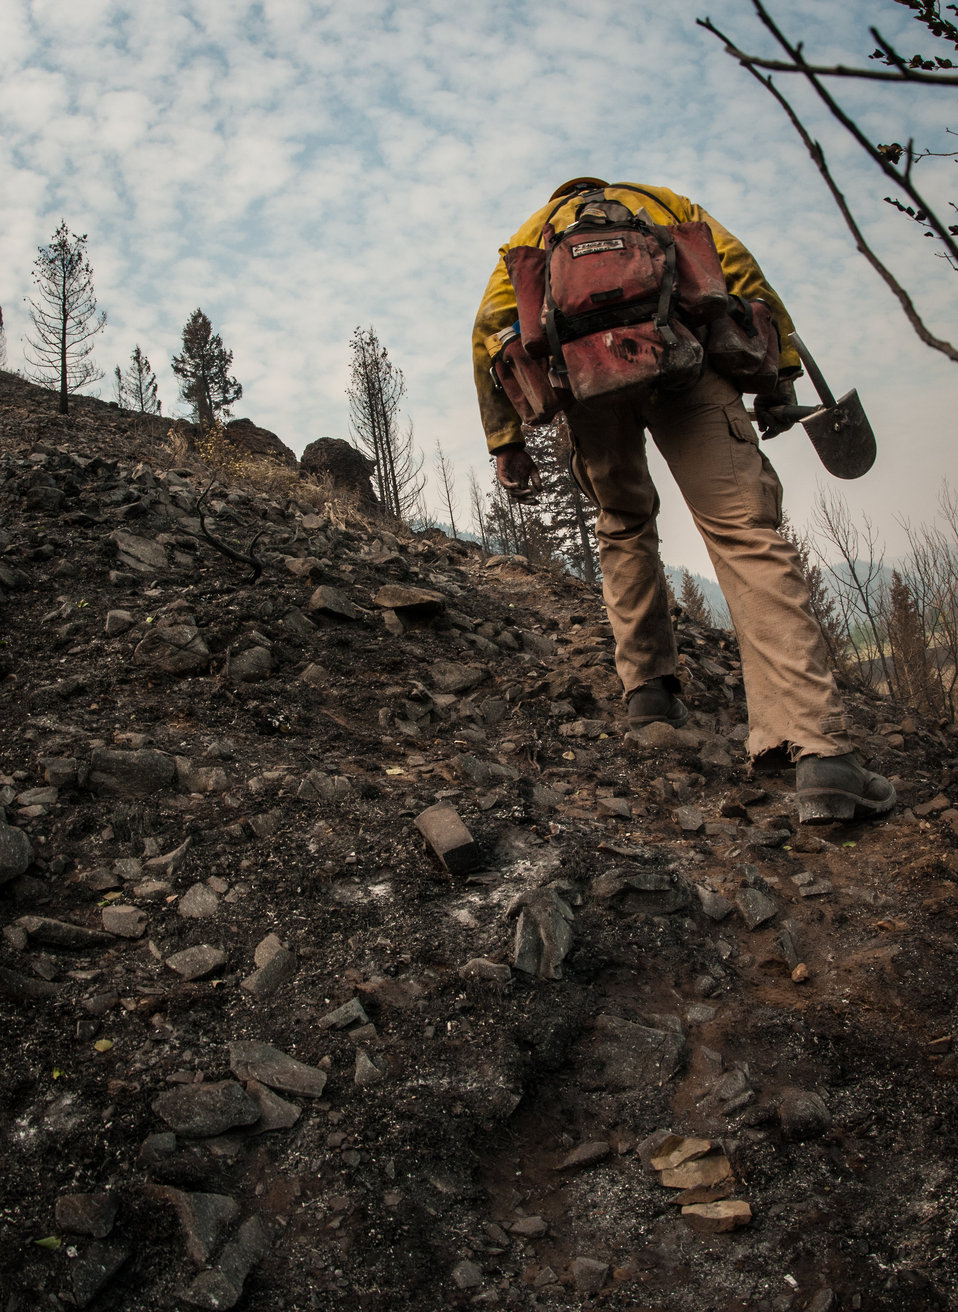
Department of the Interior, Indian Affairs (BIA) Southern Plains Initial Attack Type 2 Crew Squad Boss Trainee Bobby Robedeaux, of the Pawnee, Ponca and Otoe tribes, traverses a burned out hillside, looking and feeling for hotspots above and below the ground, during the Beaver Creek Fire, west of Hailey, ID, in the interface between U.S. Department of Agriculture (USDA) Forest Service (FS) and Sawtooth National Forest and Bureau of Land Management (BLM) lands, on Wednesday, Aug 21, 2013.